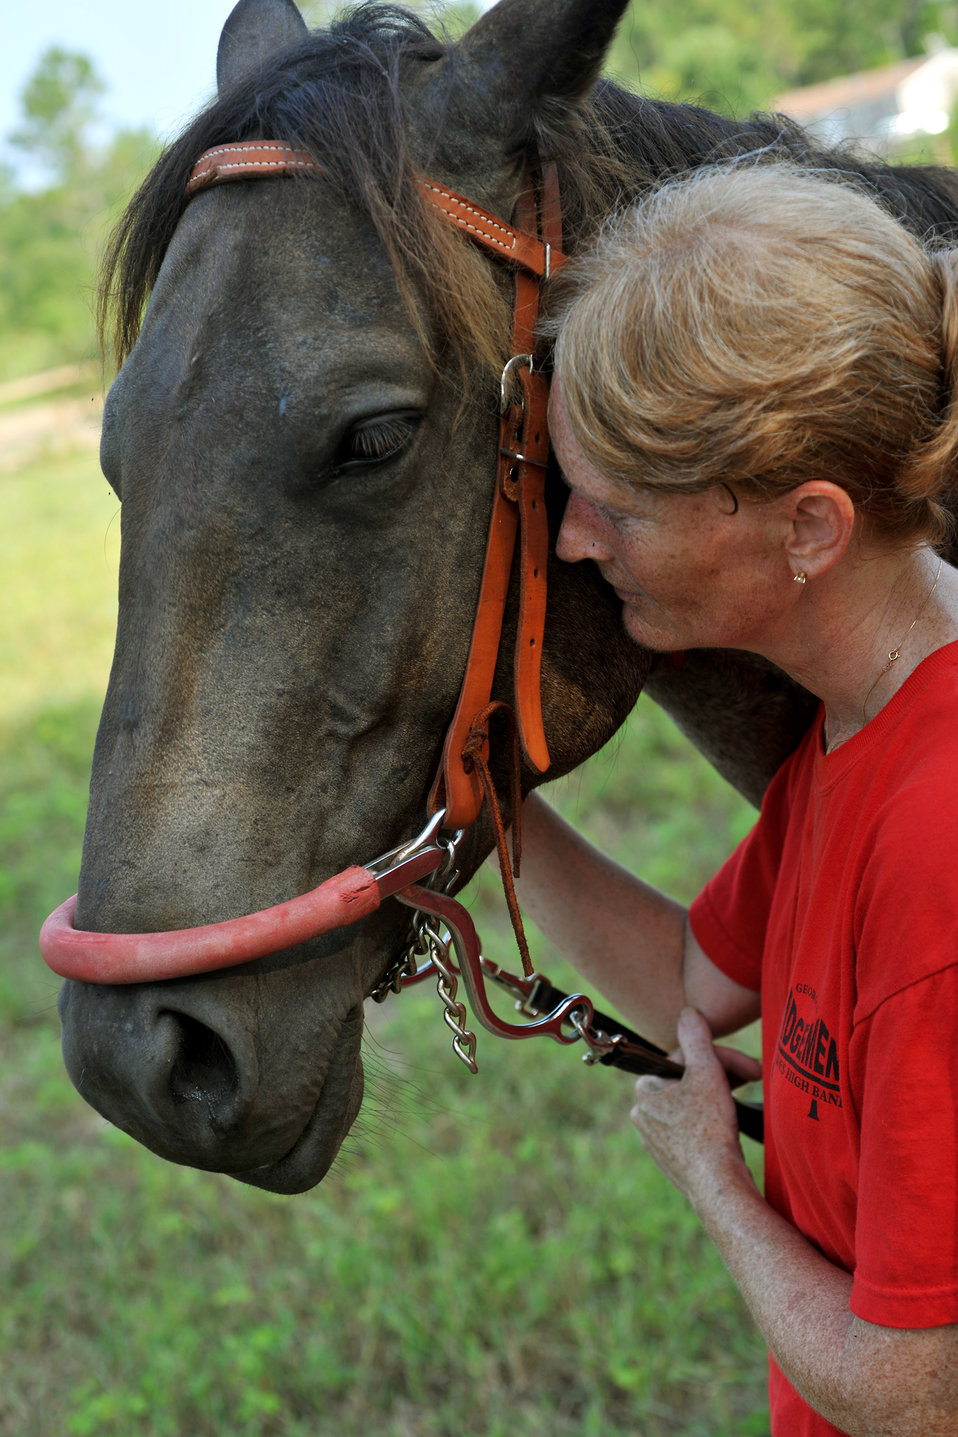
Horseback riding treats PTSD

Maj. Laurie Abney pulls the face of Blue, a riding horse, into hers during a moment of relaxation at the Hopes and Dreams Riding Facility July 31, 2010, in Quitman, Ga. The Hopes and Dreams Riding Facility is a therapeutic horseback riding program and is an activity which has been proven to help relieve symptoms of brain trauma and stress-related disorders in many people, including combat veterans. Major Abney is the 23rd Medical Group education and training flight commander.